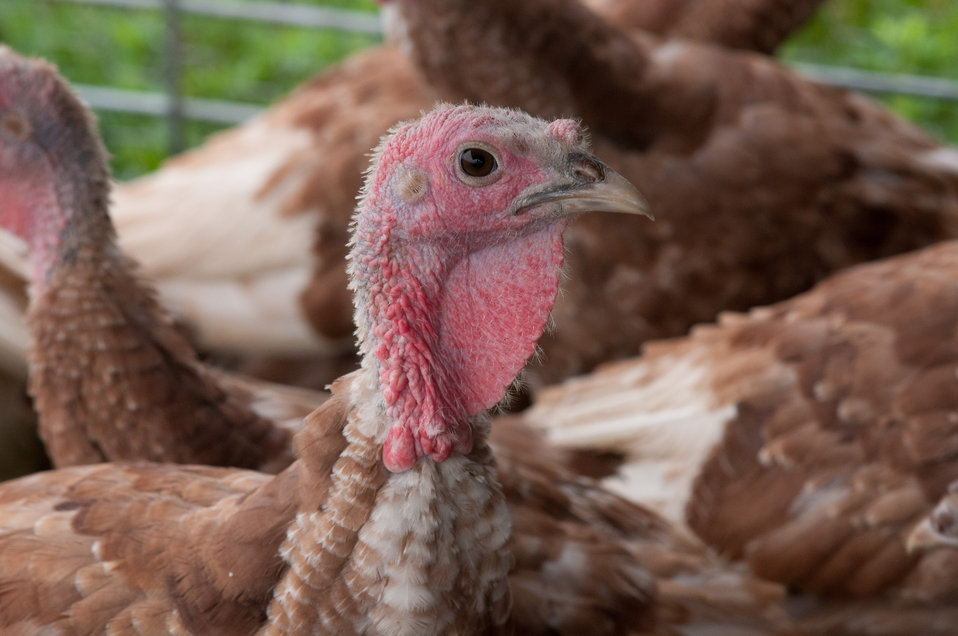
Broiler turkeys graze on organic pastures and live in pens that protect them from predators, direct sun light, and wind at Nick’s Organic Farm, owned by Nick Maravell in Adamstown, MD on Friday, July 12, 2013. The enclosures are light enough to be moved by hand, each day, one consecutive section at a time. This allows the pasture to easily recover from the grazing. The farm produces Black Angus beef, chicken, turkey, eggs, hay, soybeans, corn, alfalfa, orchard grass, rye; and other crops. The cattle are100% grass-fed receiving certified organic pasture, certified organic hay (in winter), water and mineral salts mixed with sea kelp. The cattle are not fed hormones, antibiotics or animal products. Poultry feed from grain is ground from organic grain. The poultry also graze on organic pastures. The farm has conducted on-farm research with federal, state and non-profit agencies to refine organic practices. An organization such as the U.S. Department of Agriculture (USDA) Agricultural Research Service (ARS) center in Beltsville has been able to conduct research to improve organic crops and to breed and manage the cattle so that they have.